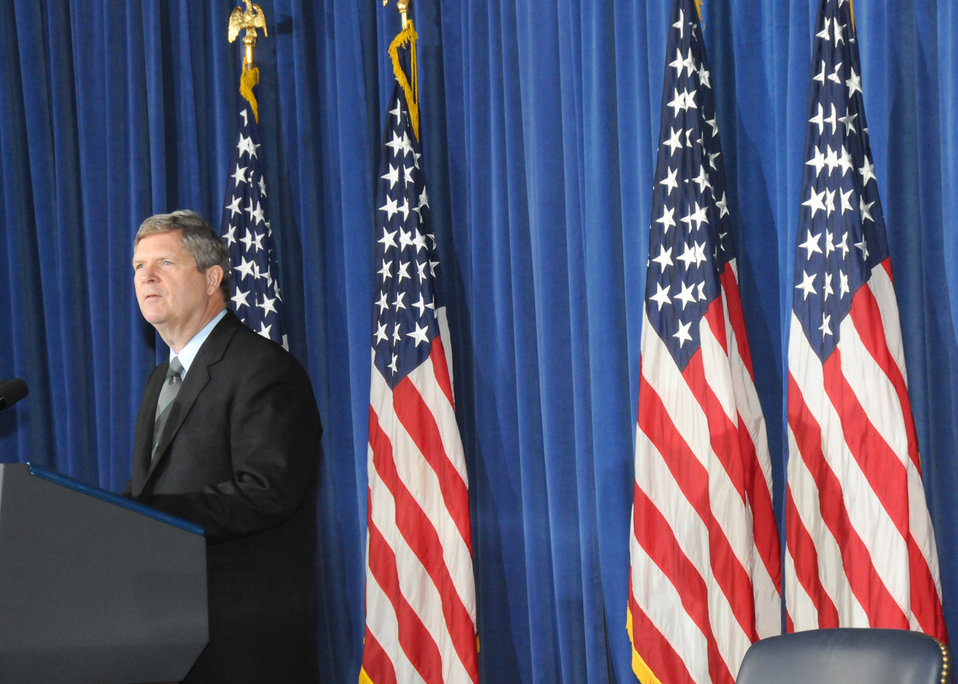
Agriculture Secretary Tom Vilsack speaks about reconnecting Americans to the outdoors at the opening of the White House Conference on America’s Great Outdoors held at the Department of Interior on Friday, April. 16, 2010. USDA photo 10di1316-46